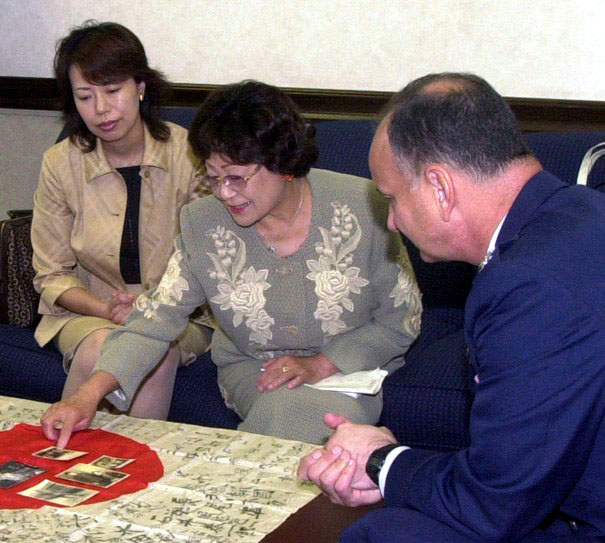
Flag return

YOKOTA AIR BASE, Japan (AFPN) -- Reiko Motegi shows Col. Don Weckhorst photos of her late husband, Mototeru Motegi, who served in the Japanese military during World War II. Weckhorst presented a Japanese flag to Motegi and her daughter, Yoshimi Morita. The flag was carried into battle by Motegi's husband and it disappeared nearly 60 years ago. A collector gave the flag to Weckhorst's father in an attempt to return it to the soldier's family. Weckworst is the commander of the 605th Air Operations Group here.